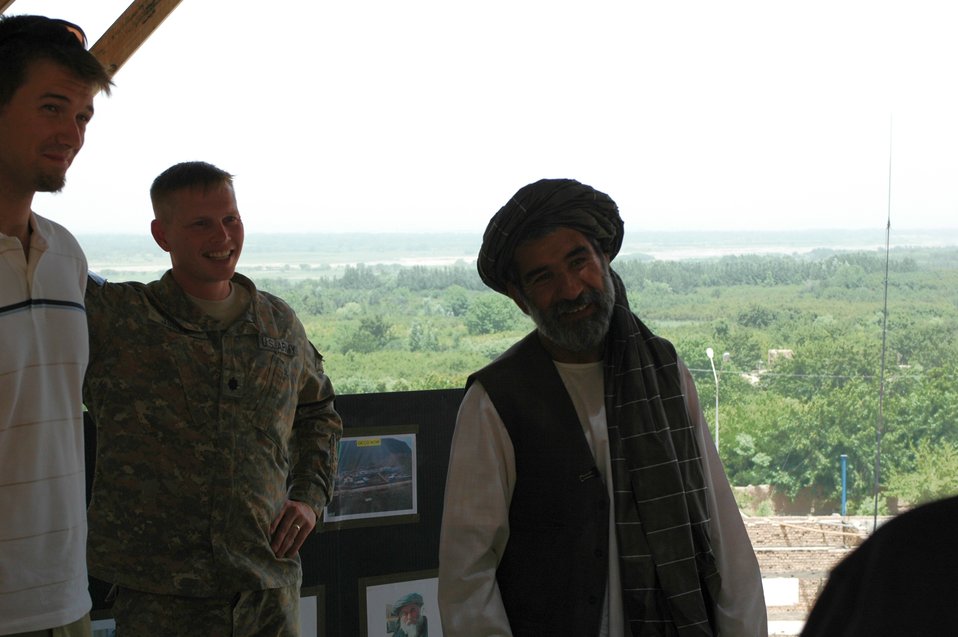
CODEL Berman